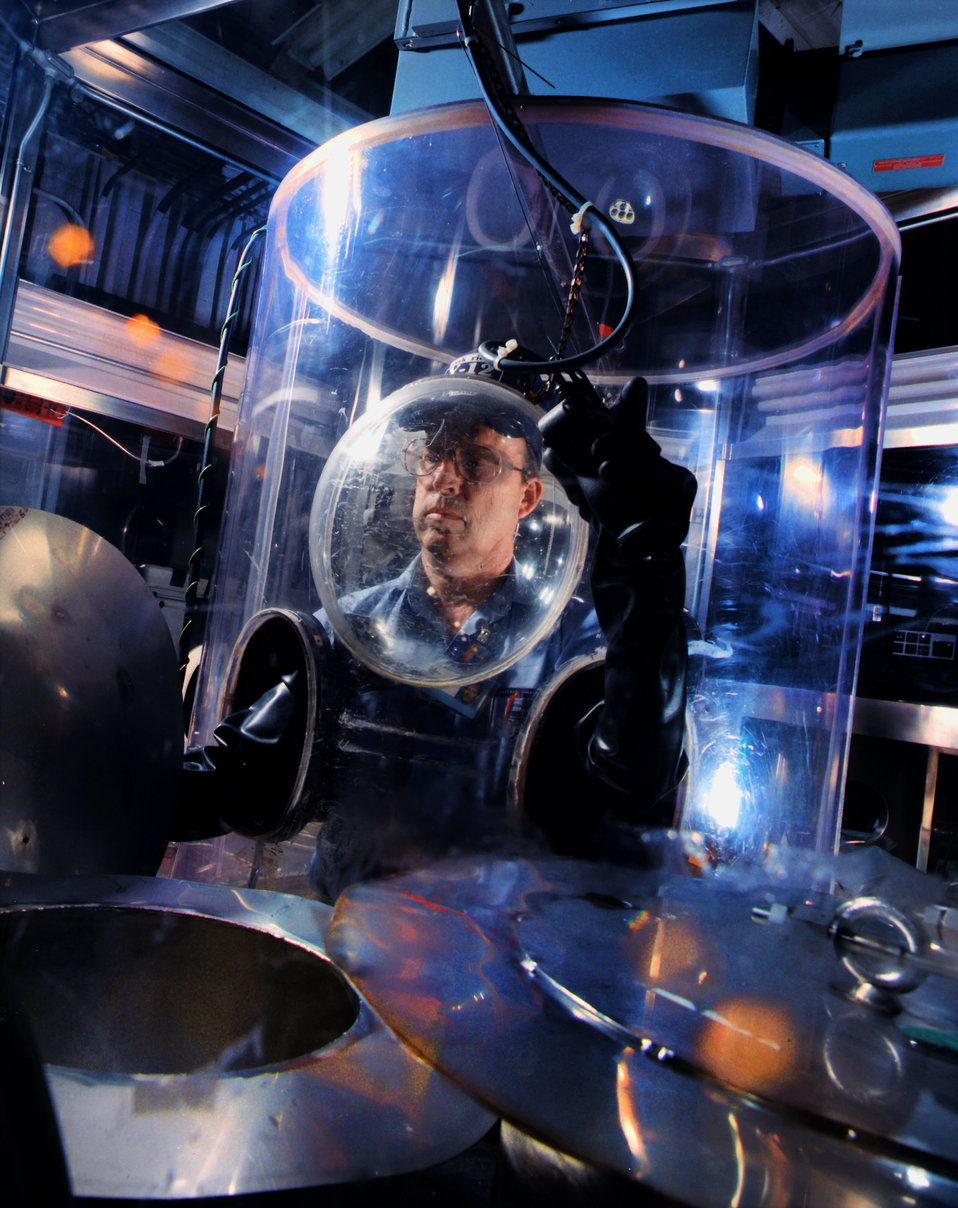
Disassembly at Y-12 Plant Oak Ridge

92-878 DOE photo by Lynn Freeny

Disassembly at Y-12 Plant Oak Ridge Tennessee 10-23-1992